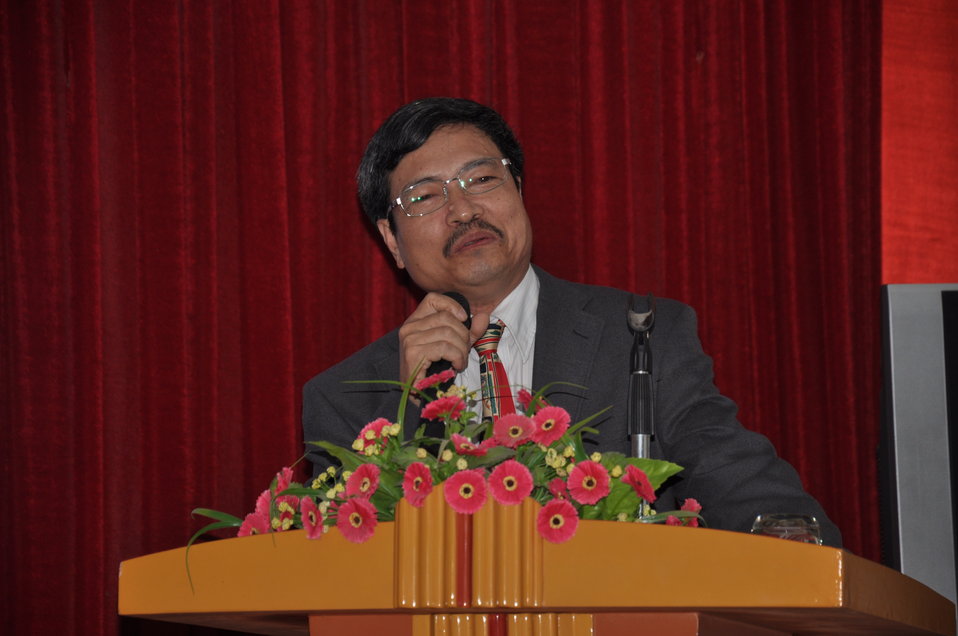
Dr. Pham Van Dong, Director General of Vietnam's Department of Animal Health at a Handover Ceremony of Personal Protective Equipment to Help Prevent Disease Outbreaks

Handover of personal protective equipment event in Hanoi.